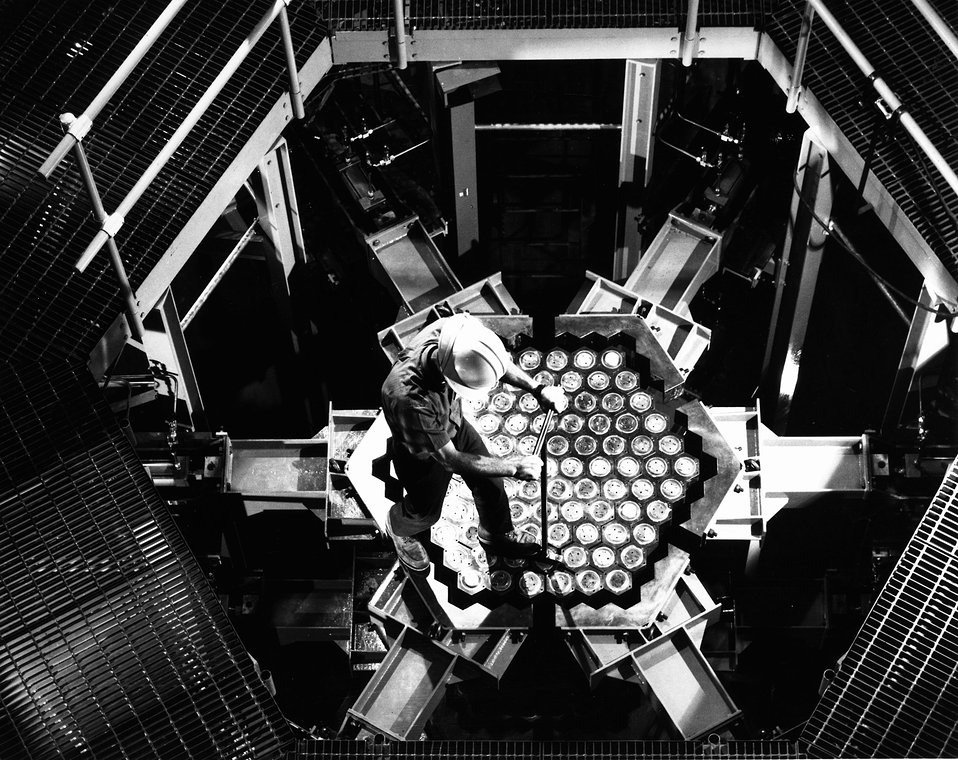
A WADCO engineer rotates one of the mock fuel bundles in the Fast Flux Test Facility's Simulated Core Mockup prior to taking measurements with a laser. c. 1971